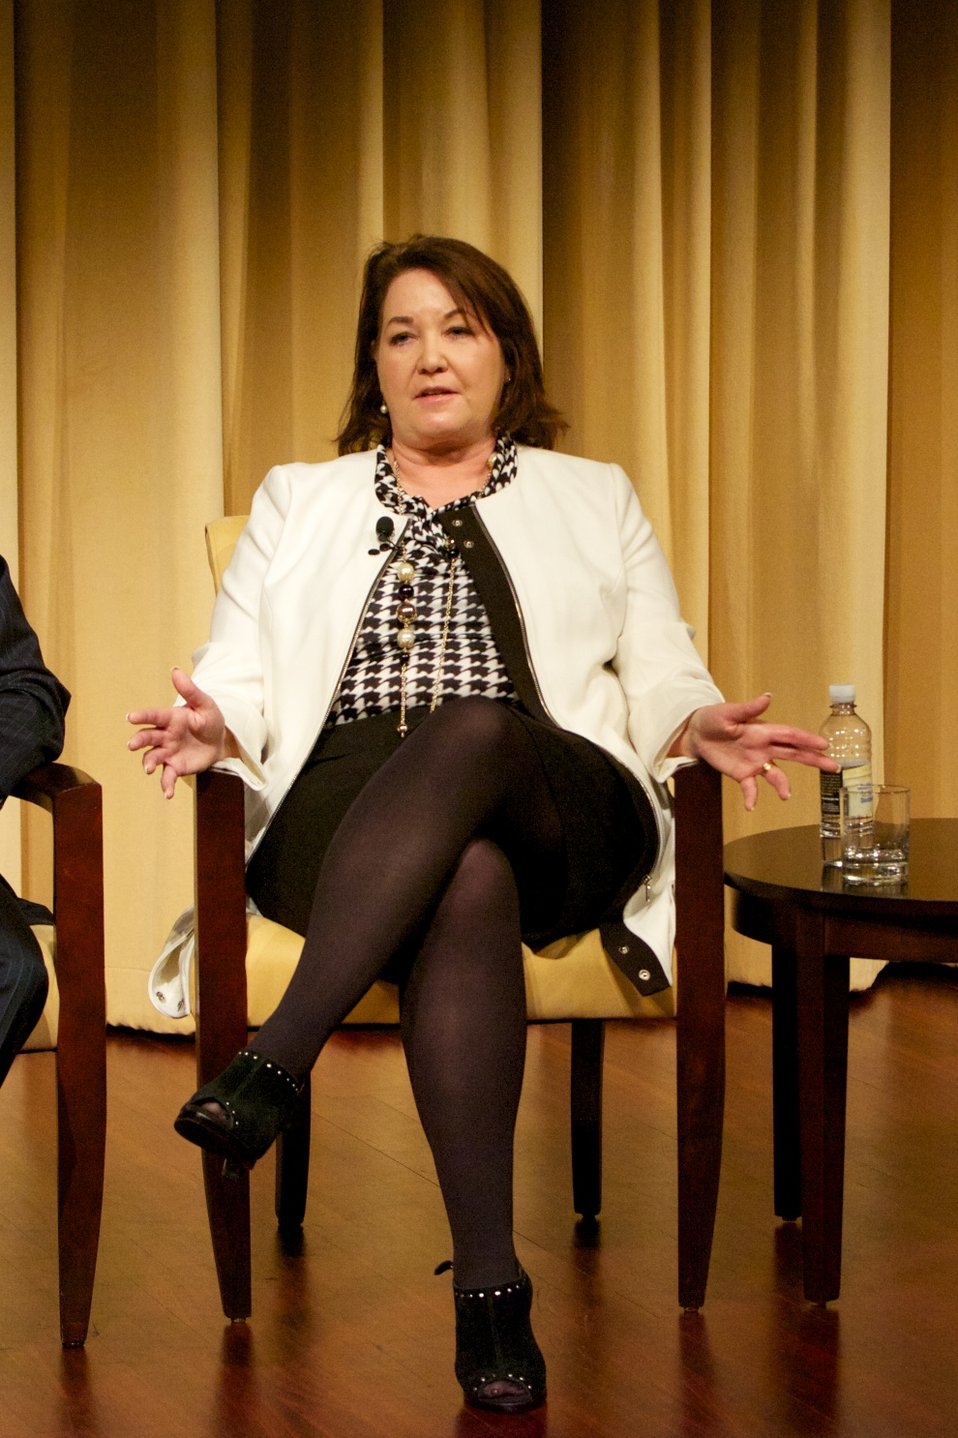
The Monuments Men; Nancy H. Yeide (right), Head of the Department of Curatorial Records at the National Gallery of Art